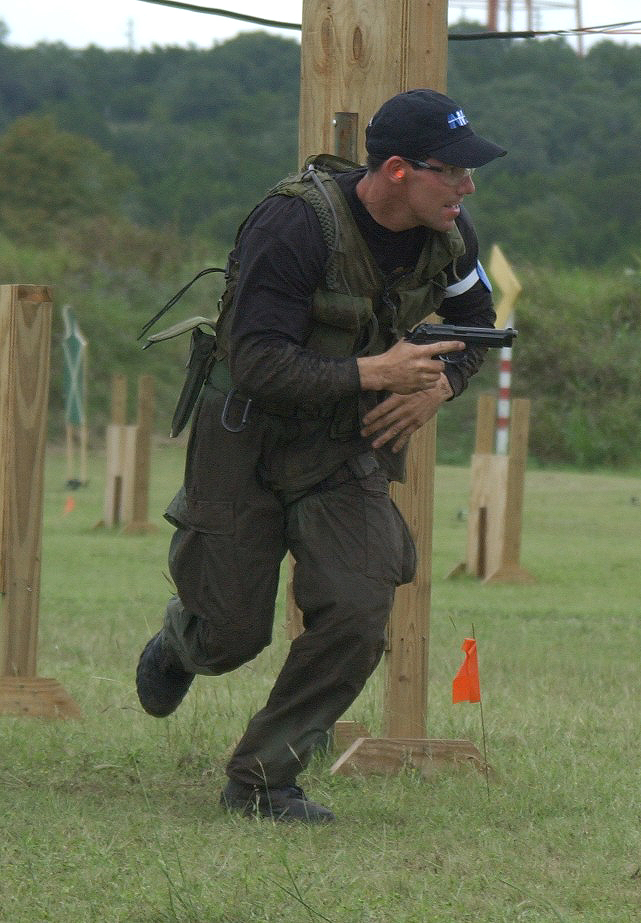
Defender Challenge '03

CAMP BULLIS, Texas -- Federal Agent Frank Tagle tracks his next target during action at the Defender Challenge 2003 security forces competition here Oct. 10 to 16. Tagle was a member of the Department of Energy team that bested 11 other groups from Air Force major commands and the British Royal Air Force Regiment to take home the Coleman Cup marksmanship trophy on their way to winning the overall Defender Challenge championship.